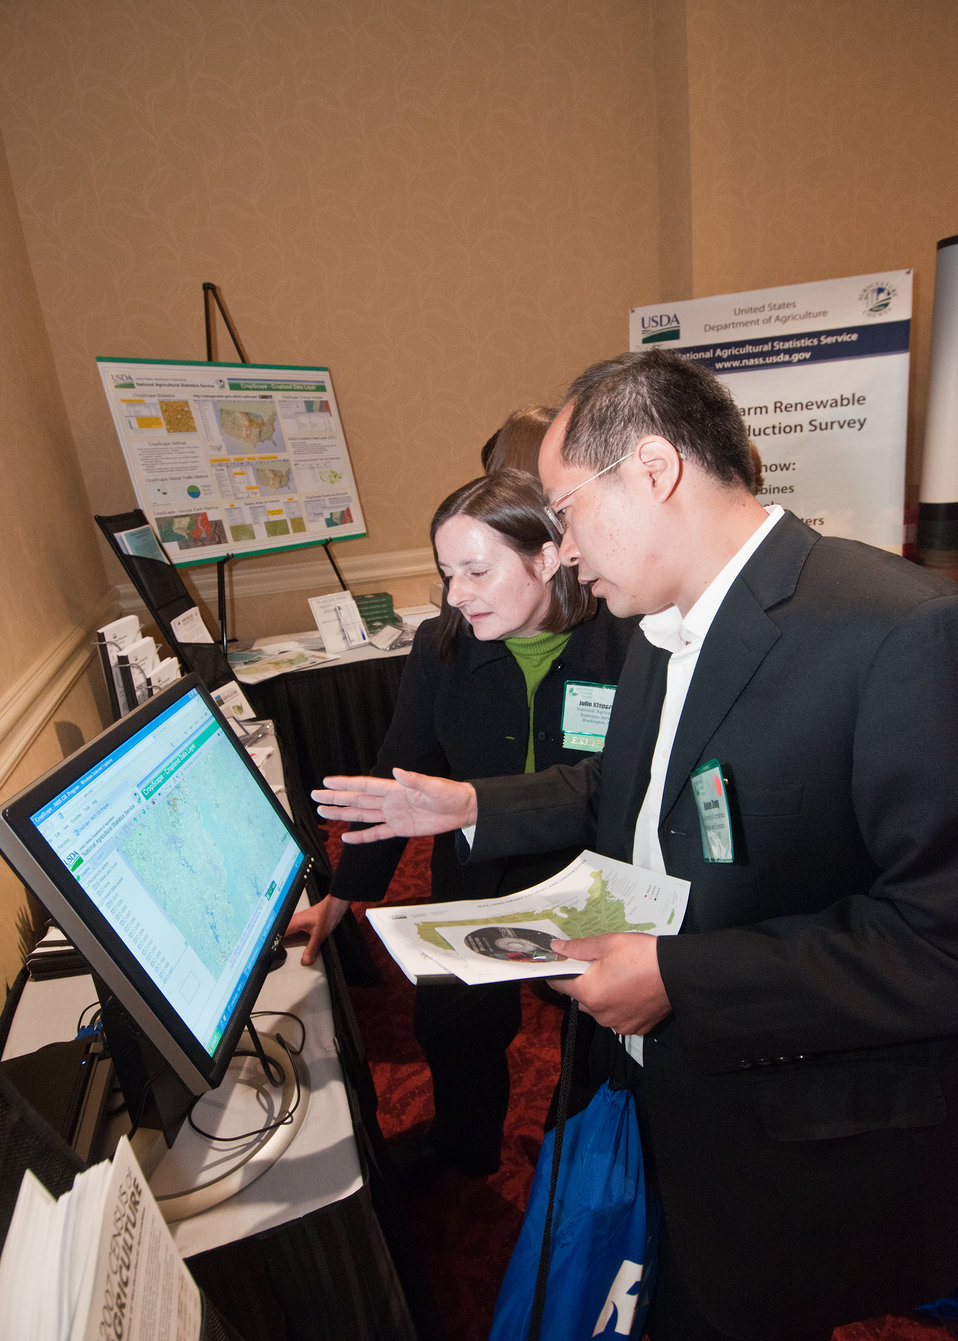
Julie Klapproth (left), National Agricultural Statistics Service, United States Department of Agriculture explains the, “CropScape” cropland data layer website to Haisen Zhang (right), Professor, University of Beijing and Senior Advisor to the Minister of Agriculture, China in the exhibit hall at the World Agricultural Outlook Board Forum in Crystal City, VA, on Thursday, February 24, 2011.